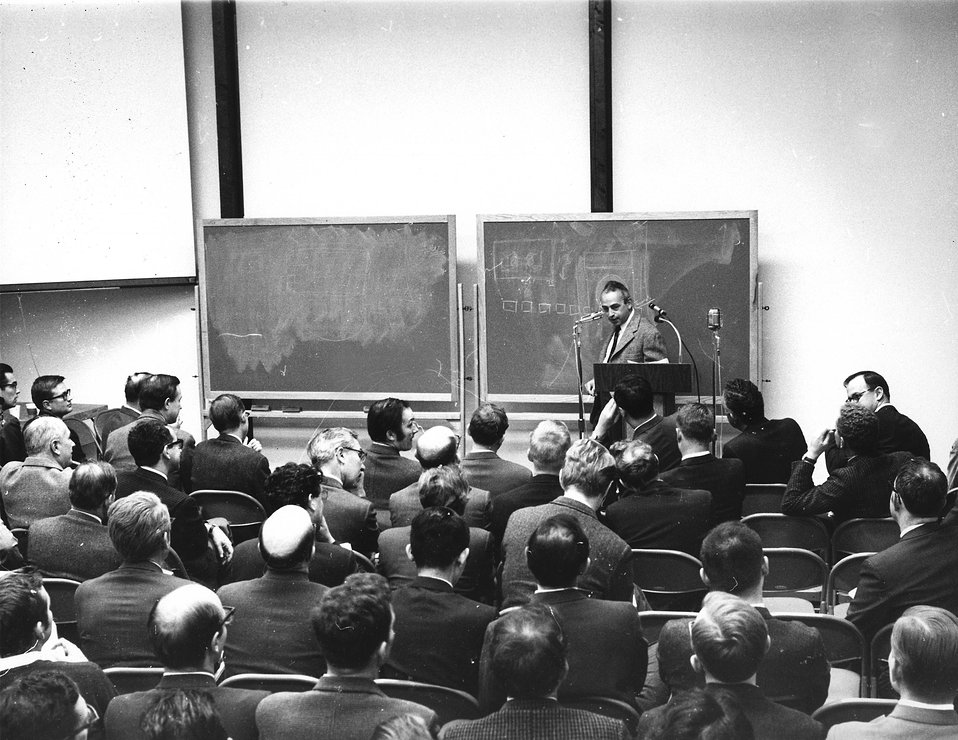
Edwin Goldwasser, Deputy Director, NAL, speaks at the NAL Users meeting held the day after the groundbreaking for the Linac. 12-02-68